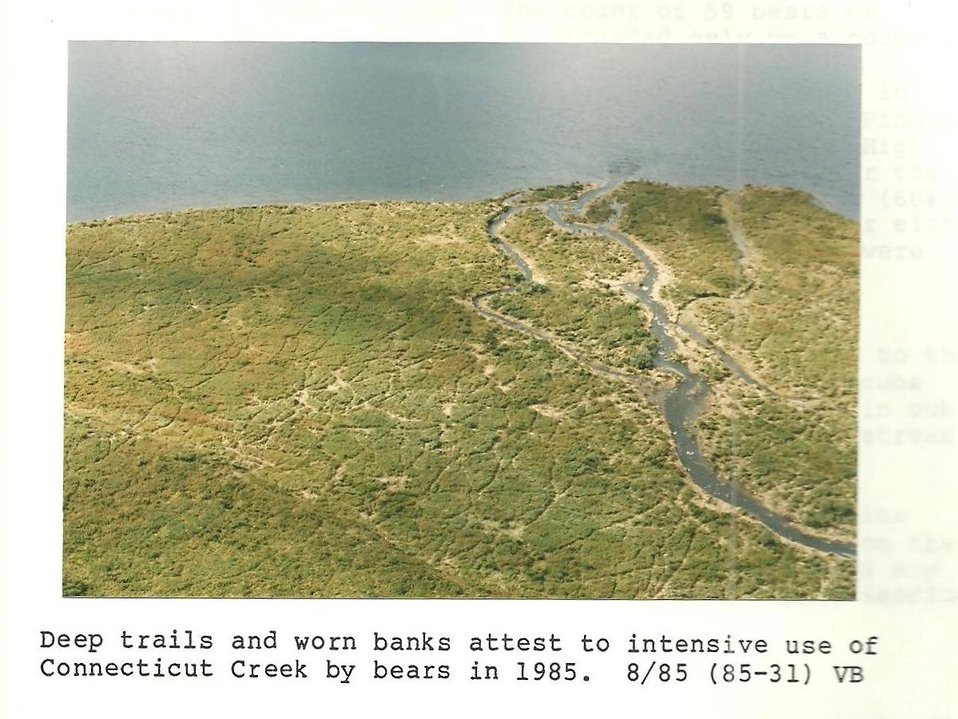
(1985) Connecticut Creek

Credit: USFWS

Source and Contact: Kodiak National Wildlife Refuge